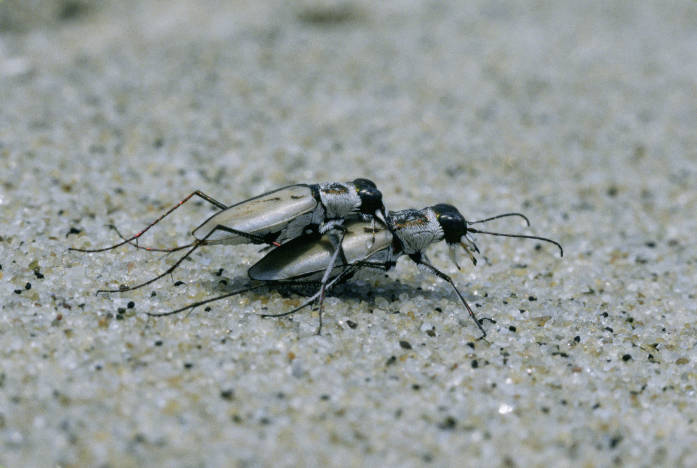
Northeastern Beach Tiger Beetles